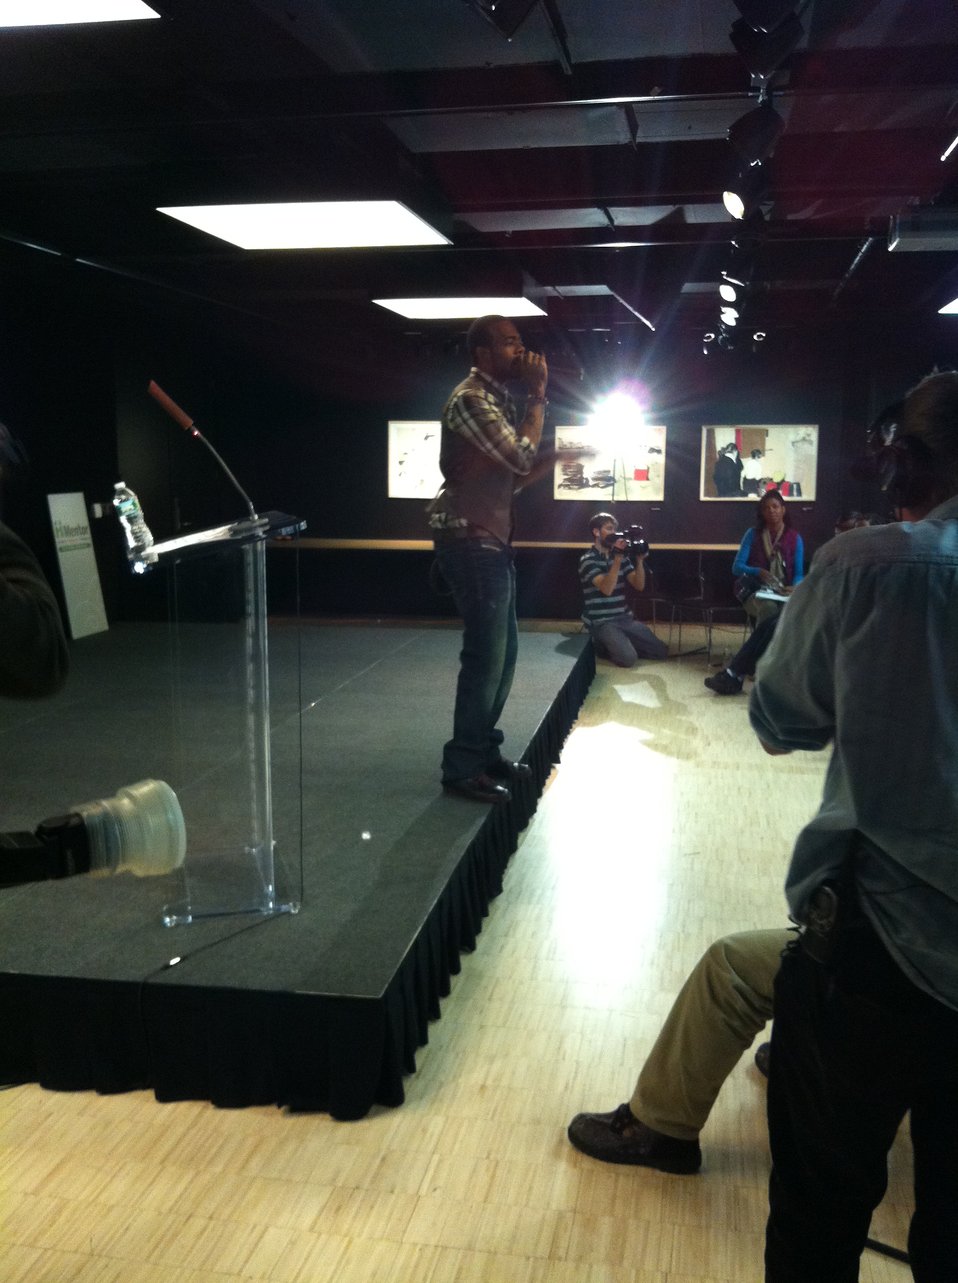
Mentor 8